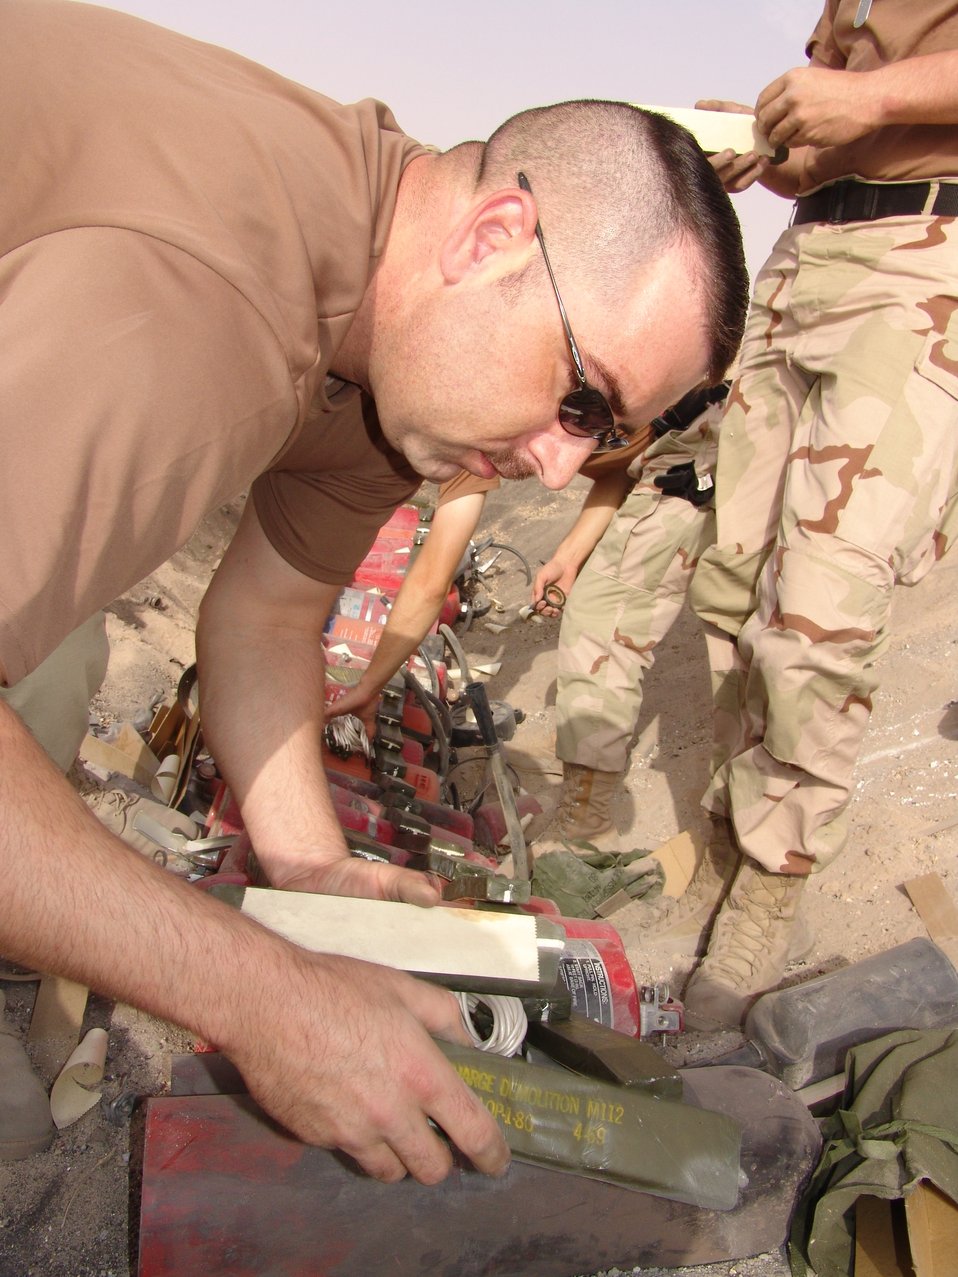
Explosive line

SOUTHWEST ASIA -- Staff Sgt. Ray Pomeroy places C-4 explosives on hazardous items marked for disposal at a forward-deployed location. He is assigned to the 386th Expeditionary Civil Engineer's Squadron explosive ordnance disposal flight and is deployed from Kadena Air Base, Japan.